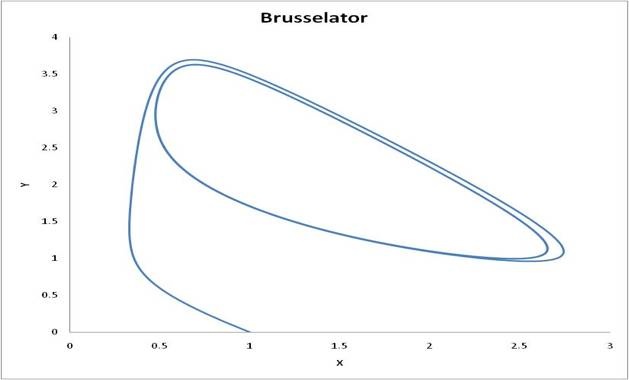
Plot of Autocatalytic reaction